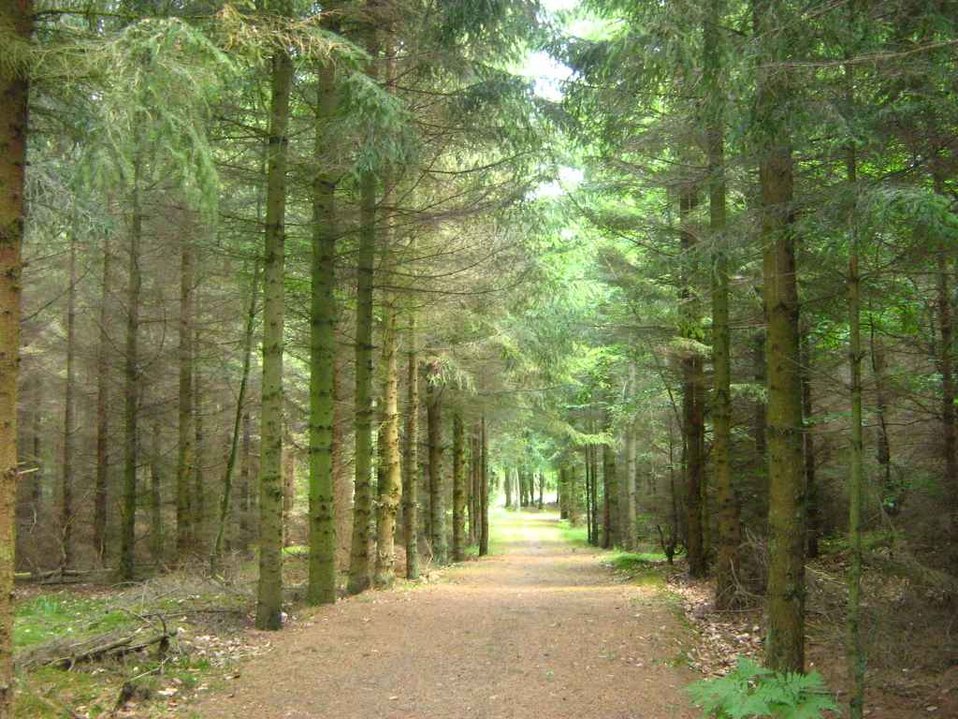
Deutsch: Fichtenwald in der Ueckermünder Heide bei Rothemühl.